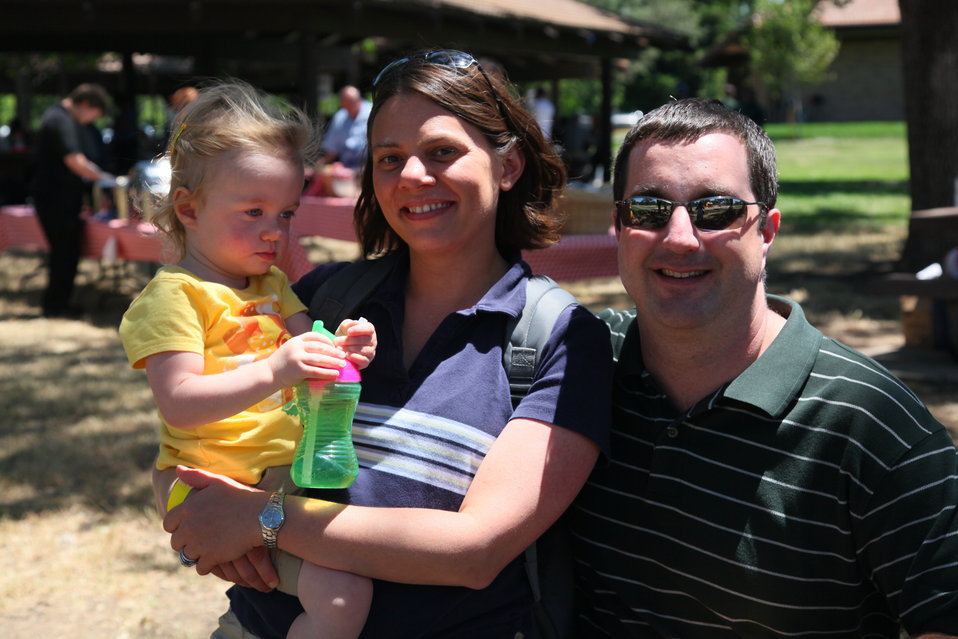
2011 Annual Picnic